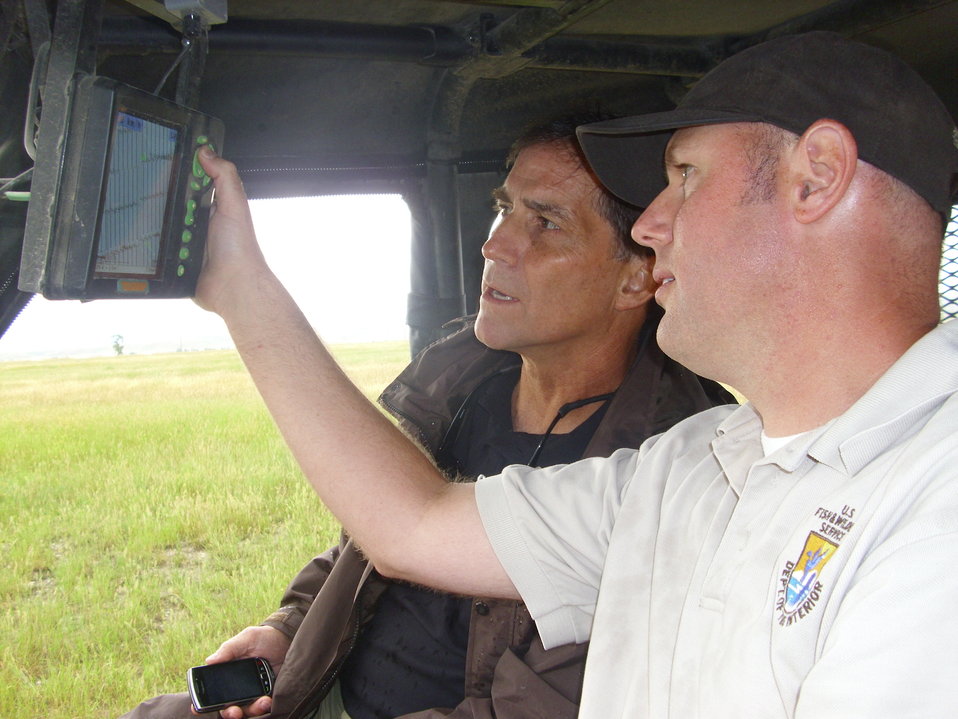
Dan Takes a Riding Tour of National Elk

National Elk Refuge Deputy Manager Paul Santavy (right) shows FWS Director Dan Ashe how to work the GPS unit in a vehicle used to place irrigation hoses.